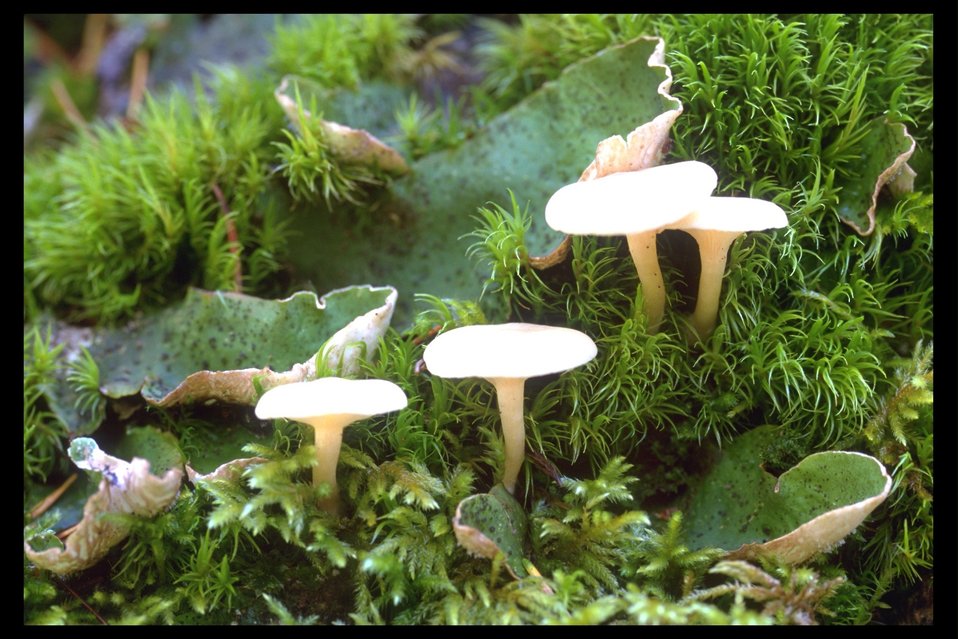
Mushrooms and moss along the Rogue River Trail near Prospect, OR.